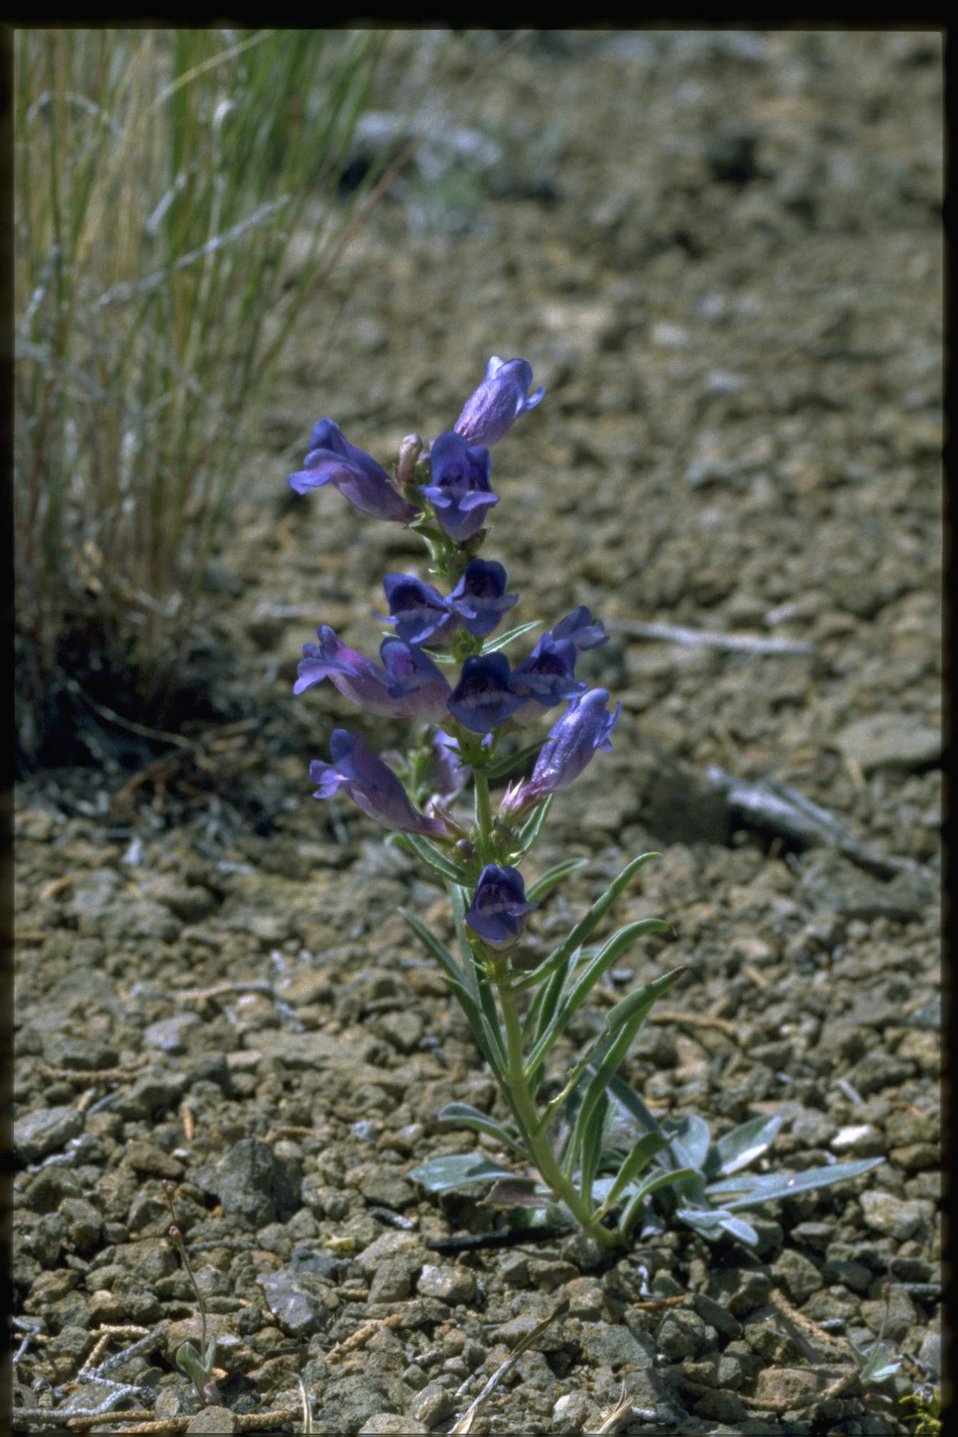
Medium shot of Penstemon wildflower.